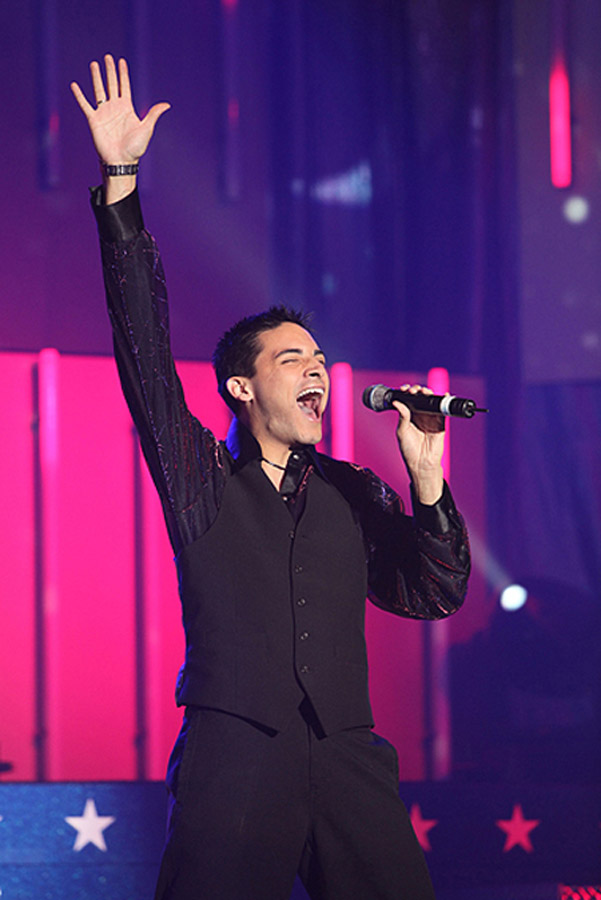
13 Airmen take Worldwide Talent Search honors

Staff Sgt. Rick Rosales earned Best of Show and top Male Vocalist honors during the Air Force Worldwide Talent Search Jan. 11 through 19 held at Lackland Air Force Base, Texas. Sergeant Rosales is from Keesler Air Force Base, Miss.